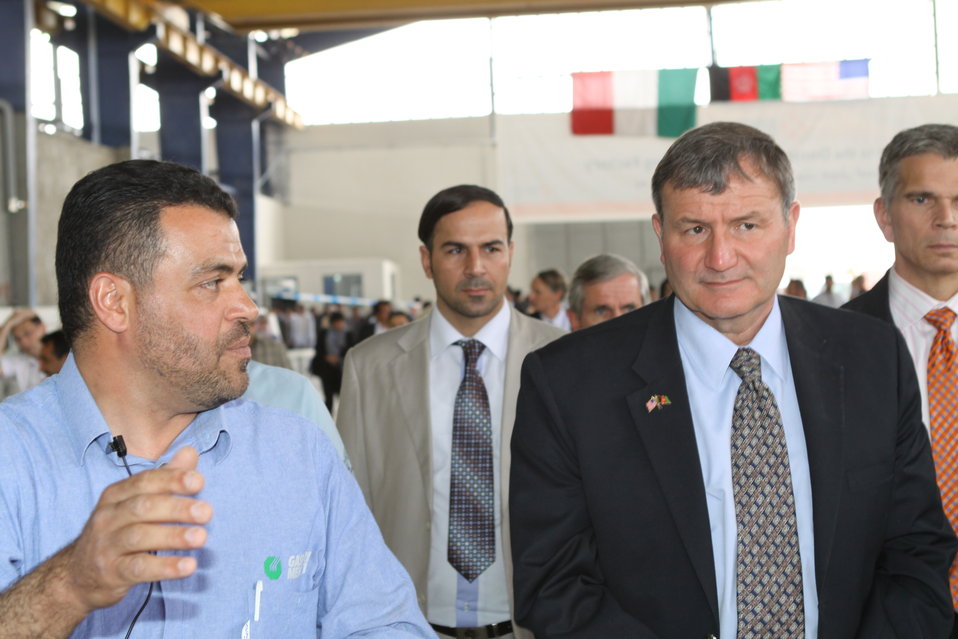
100525 Hirat Marble Conference 431